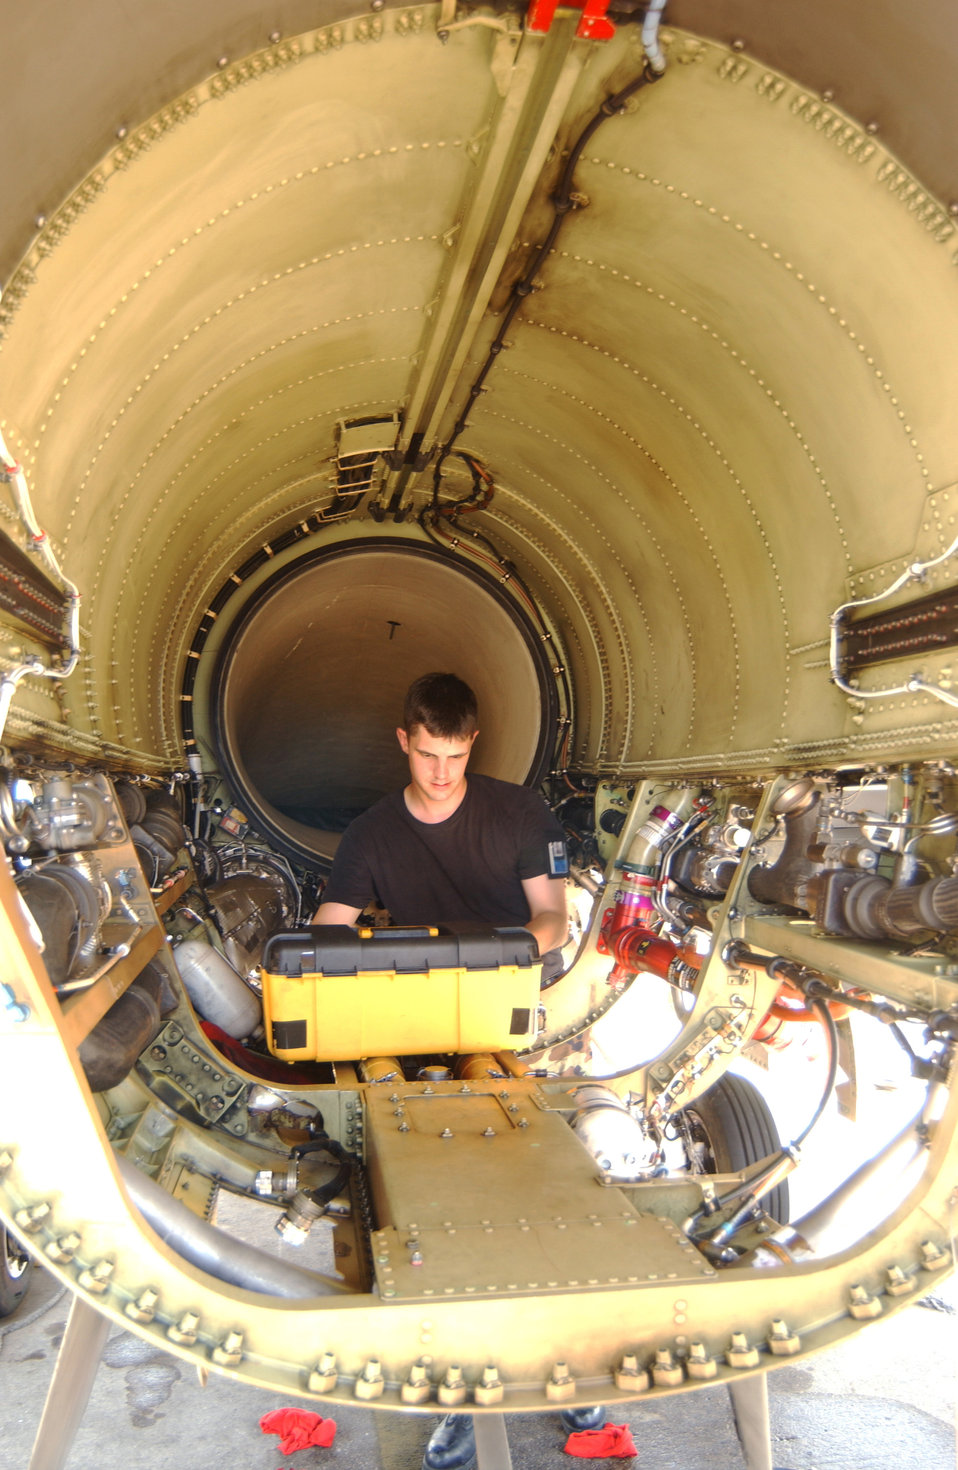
Tunnel of doom

SHAW AIR FORCE BASE, S.C. -- Senior Airman Chris Hubbard measures the damage of a 417.4 bulkhead with a micrometer here June 15. Airman Hubbard is assigned to the 20th Equipment Maintenance Squadron.